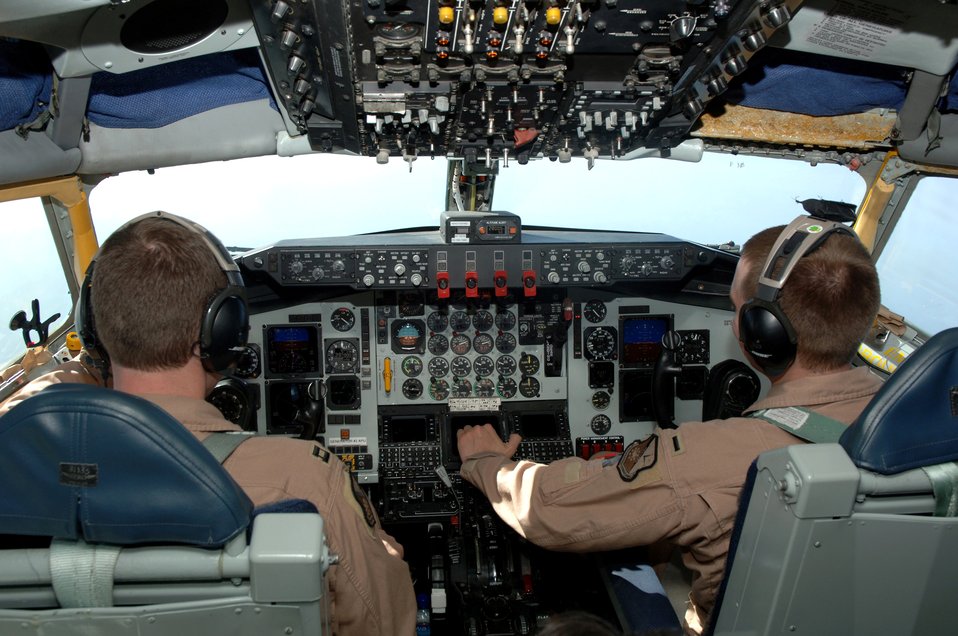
A view to a refuel

Capt. Brian Temple (left) and 1st Lt. Chris Reid of the 340th Expeditionary Air Refueling Squadron fly their KC-135 Stratotanker during an aerial refueling mission over Southwest Asia on Tuesday, April 11, 2006.